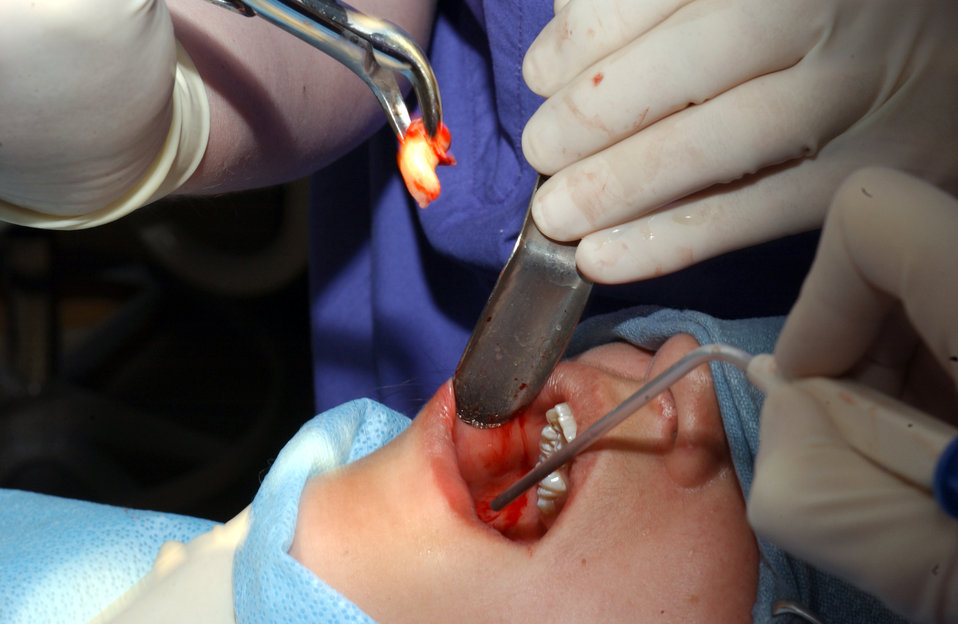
Wise extraction

SPANGDAHLEM AIR BASE, Germany -- Capt. James Wisner pulls a wisdom tooth from Airman 1st Class Maja Stevens during an emergency extraction here April 6. Captain Wisner is a general dentist with the 52nd Dental Squadron and Airman Stevens is a member of the 52nd Communications Squadron.